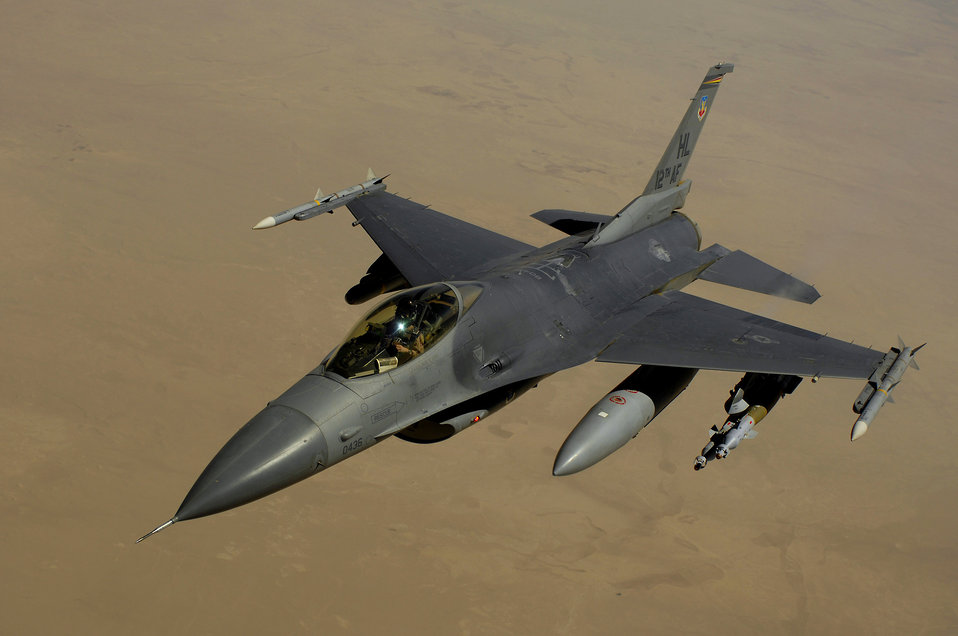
Feb. 11 airpower summary: F-16 levels bunker complex

An F-16 Fighting Falcon aircraft returns to the fight after being refueled during a mission over Iraq. The F-16s perform tactical shows of force and provide close-air support for coalition forces in support of Operation Iraqi Freedom.